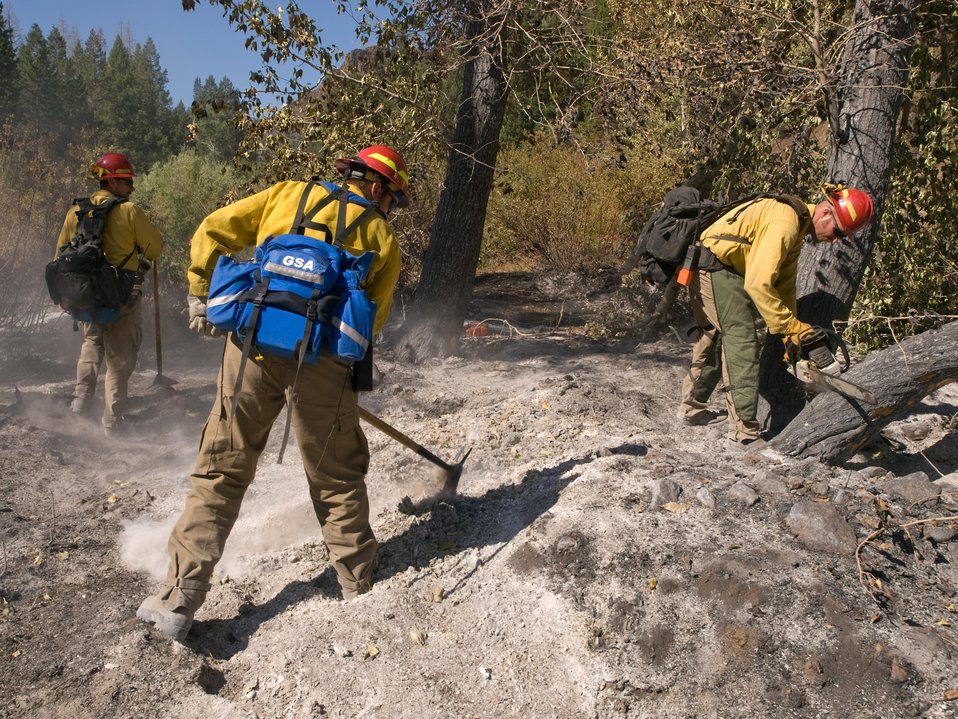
Firefighters work on the Lodgepole Fire. The Lodgepole Fire in the Salmon-Challis National Forest near Challis, ID began on Jul. 20, 2013 by lightning has consumed approximately 20,080 acres and is approximately 15% contained.